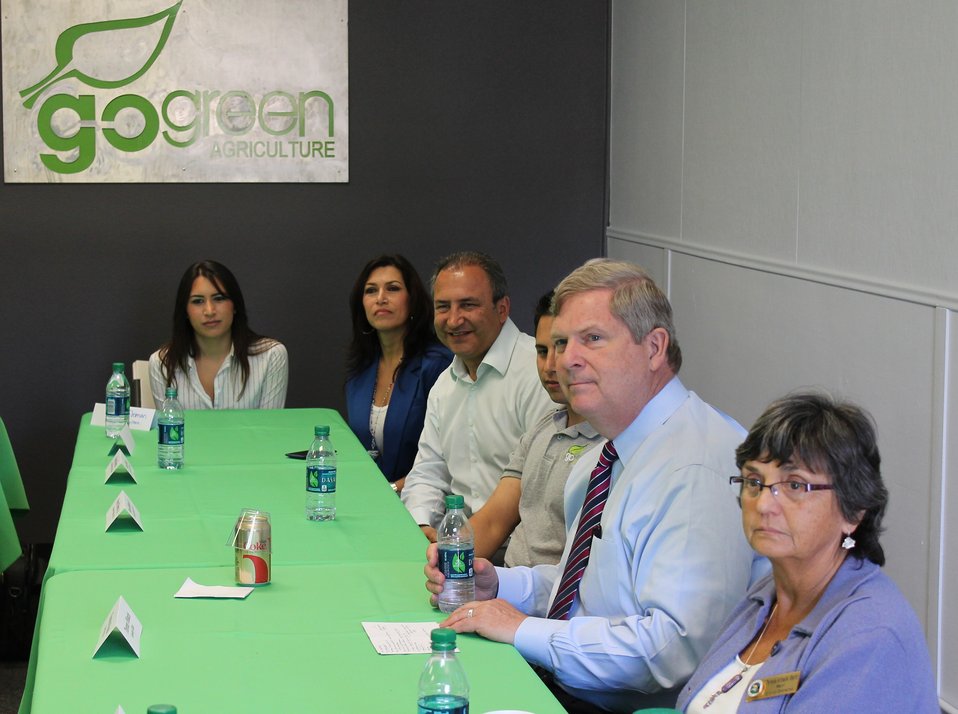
(R to L) Encinitas, California Mayor Teresa Barth, Agriculture Secretary Tom Vilsack, and GoGreen Agriculture Chief Executive Officer Pierre Suleiman held a roundtable discussion with organic producers in Encinitas, CA on Apr. 17, 2013. GoGreen Agriculture is a family owned and operated hydroponics organic producer of lettuce, kale and spinach. GoGreen builds mini-farms in or near large cities and sells the premium produce locally. This eliminates major transportation time and cost, improves freshness, reduces petroleum consumption, and provides local jobs.